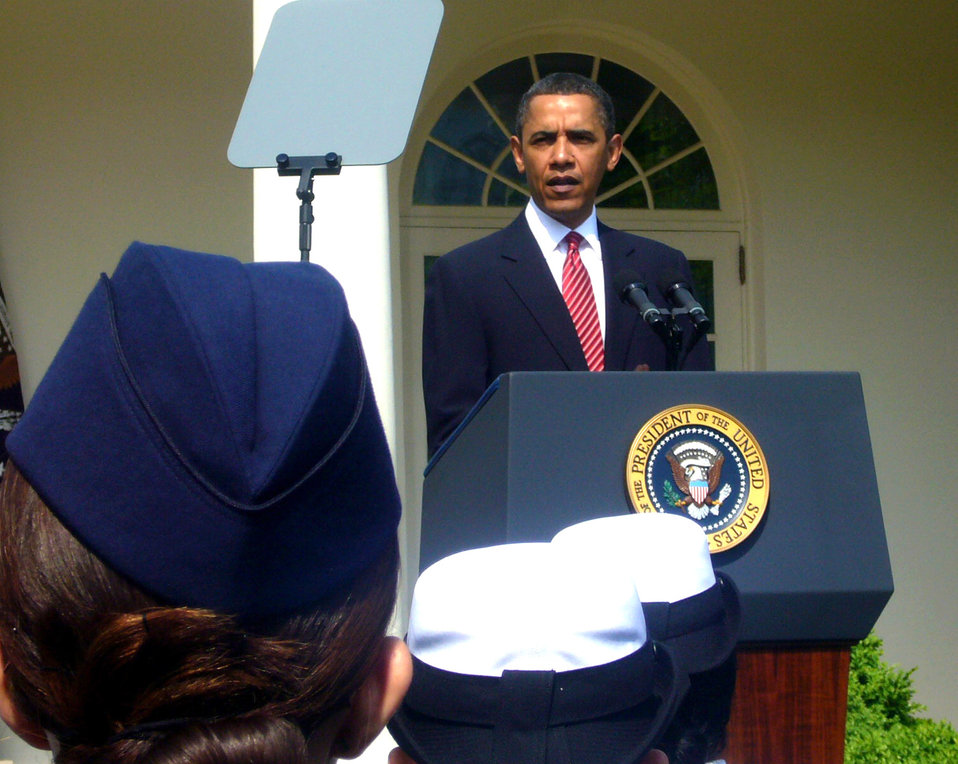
From Airmen to American

President Barack Obama addresses servicemembers and guests during the Oath of Allegiance ceremony April 23, 2010, at the White House. Two Langley Airmen and 22 other servicemembers took the Oath of Allegiance, thereby becoming American citizens.